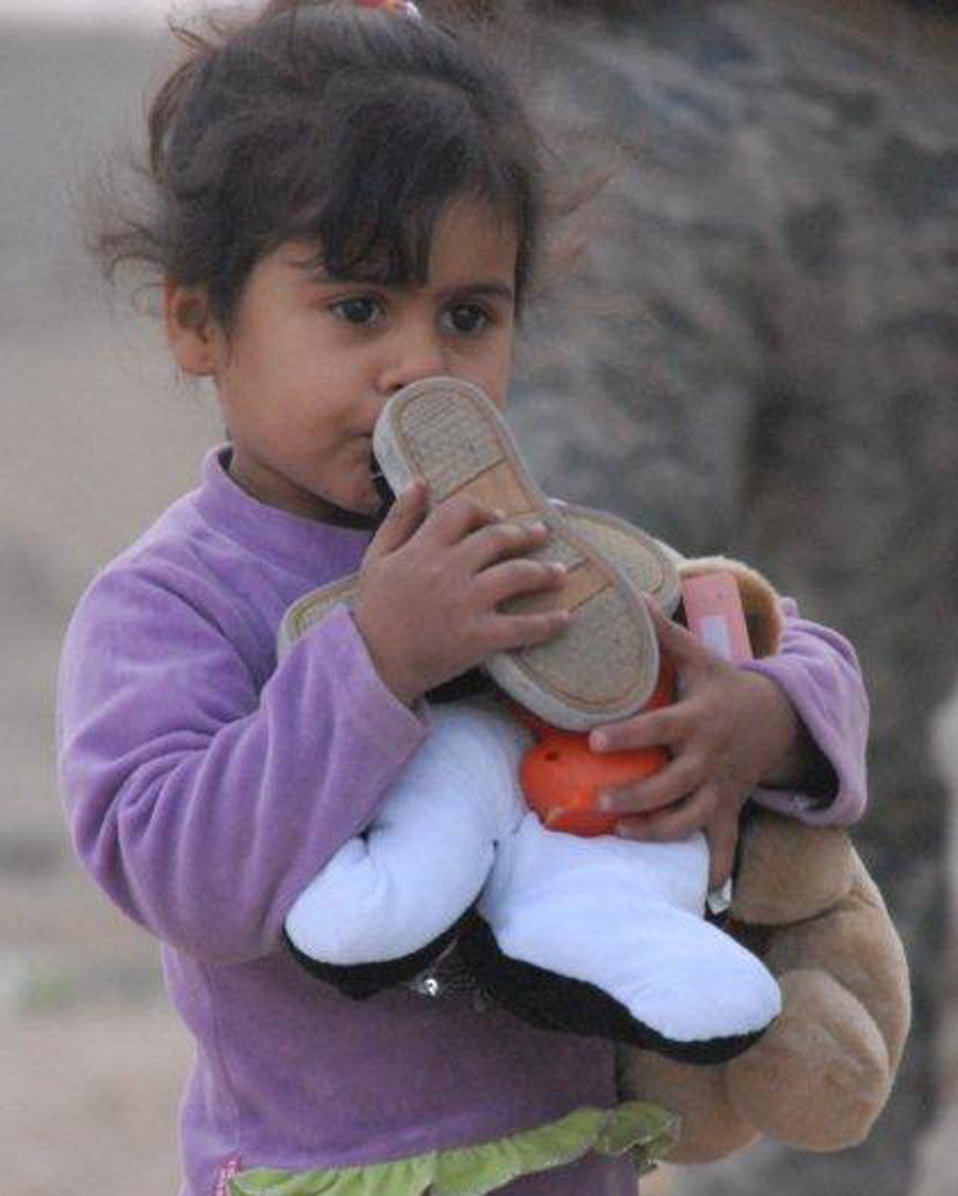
Airmen donate school supplies to local Iraqi children

A young Iraqi girl hugs the toys and shoes she received from the Echelon Above Division-Advise and Train team Dec. 16 at Ur Elementary School near Tallil Air Base, Iraq. Airmen assigned to the EAD-AT team handed out school supplies and toys to more than 70 children.